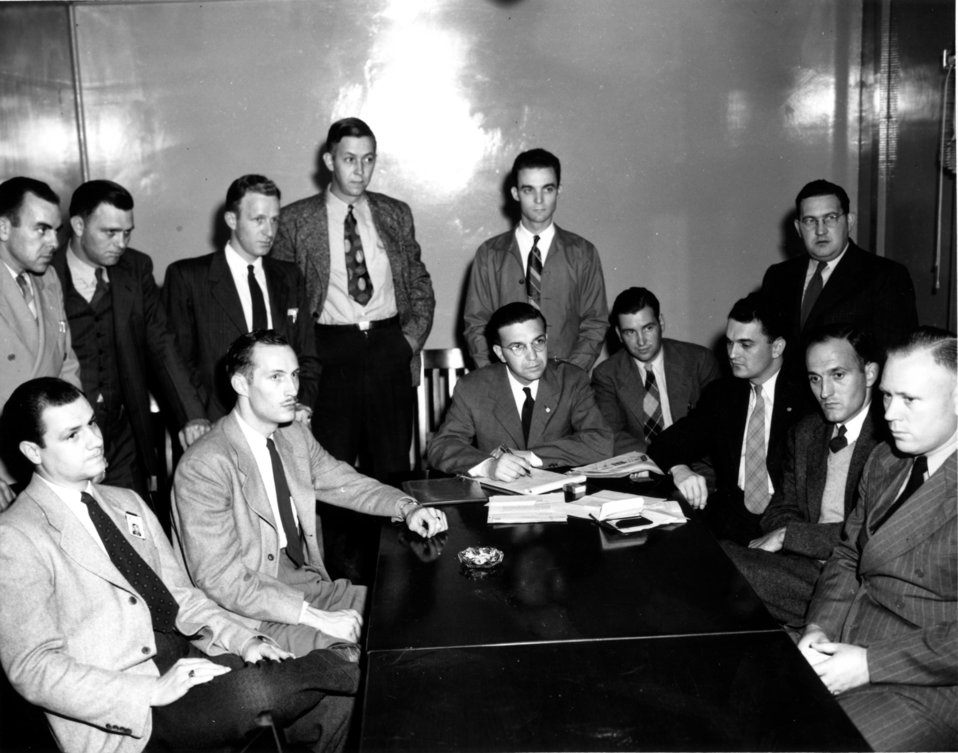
Recreation at Oak Ridge